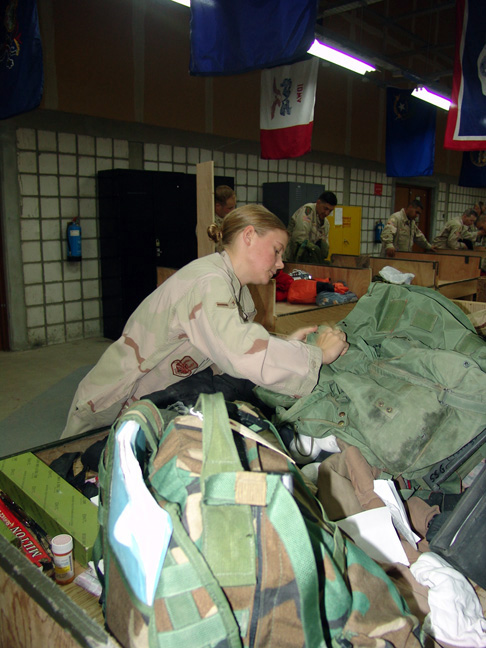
Security forces work as customs inspectors

SOUTHWEST ASIA -- Airman Tiffany McLaughlin checks a Soldier's bag before clearing him through customs. She and other 886th Expeditionary Security Forces Squadron customs inspectors check for prohibited items, such as agricultural products, war souvenirs and ammunition.